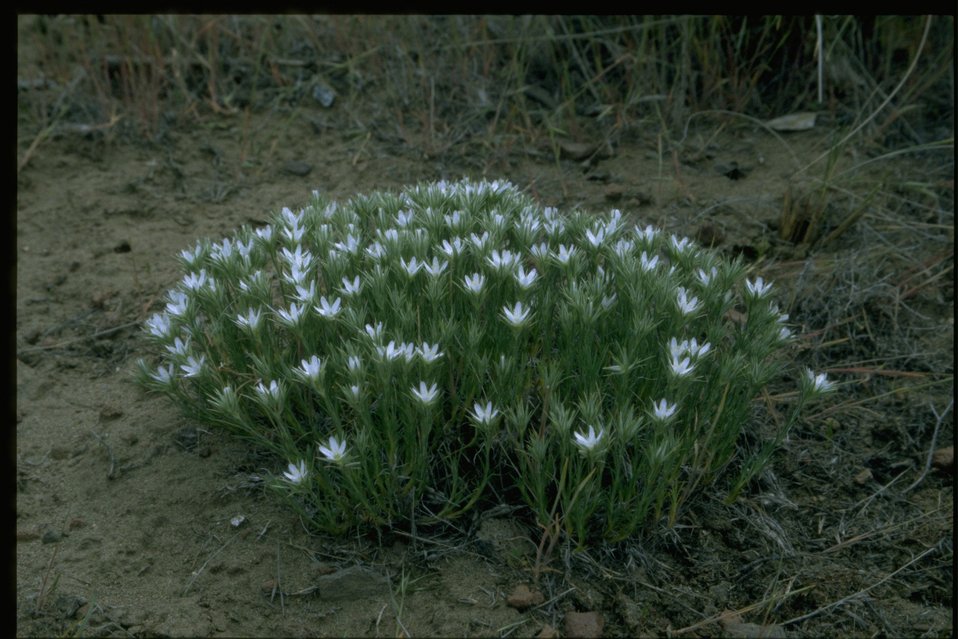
Shot of Franklin's sandwort (Arenaria franklinii) habitat.